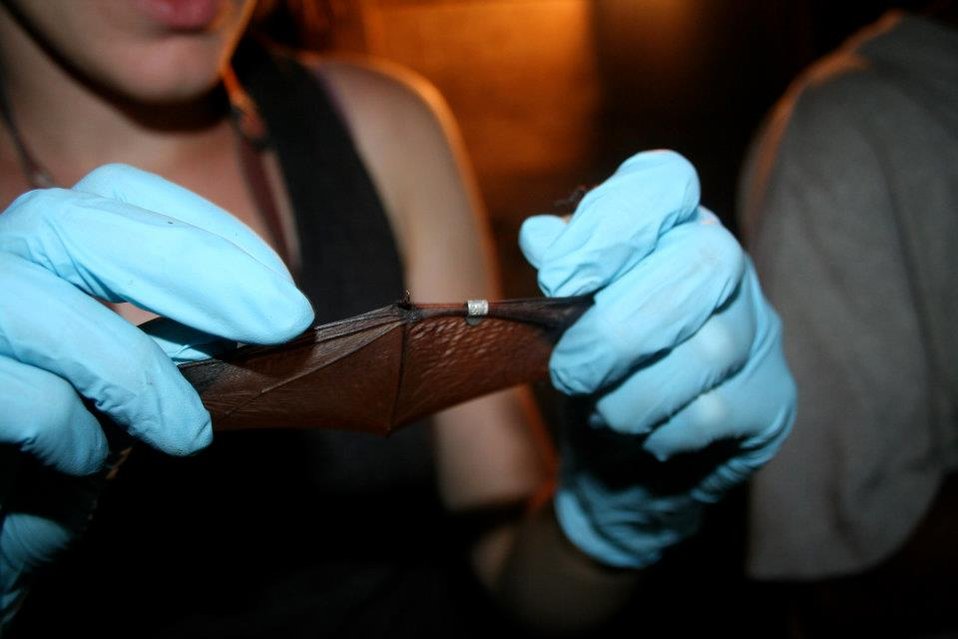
Wing band on little brown bat